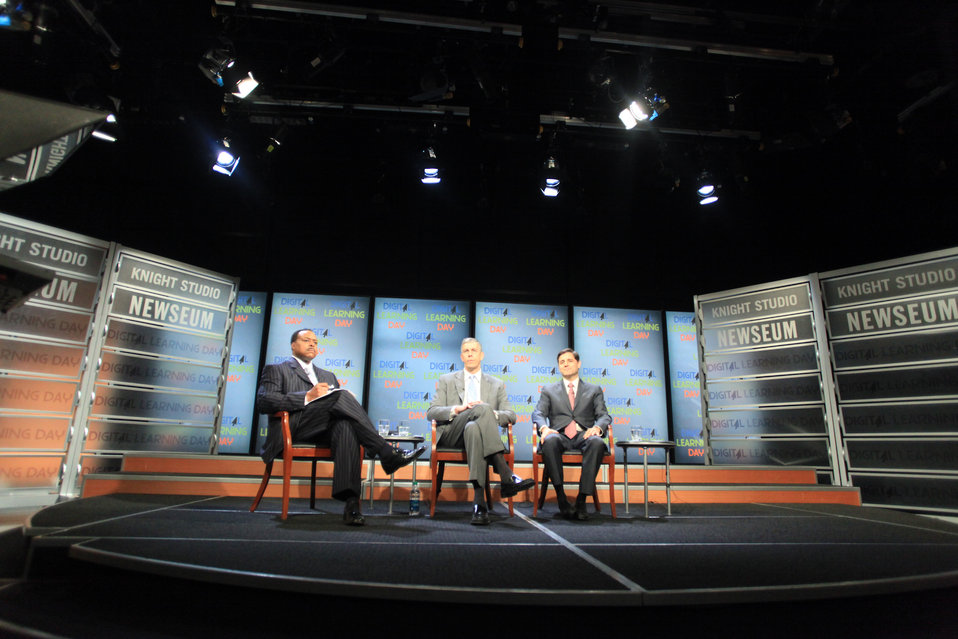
FCC Chairman Genachowski at the Digital Learning Day Town Hall

FCC Chairman Genachowski, the U.S. Department of Education Secretary Arne Duncan and ABC7's Leon Harris on set in the first-ever Digital Learning Day Town Hall in Washington, DC, on February 1, 2012.